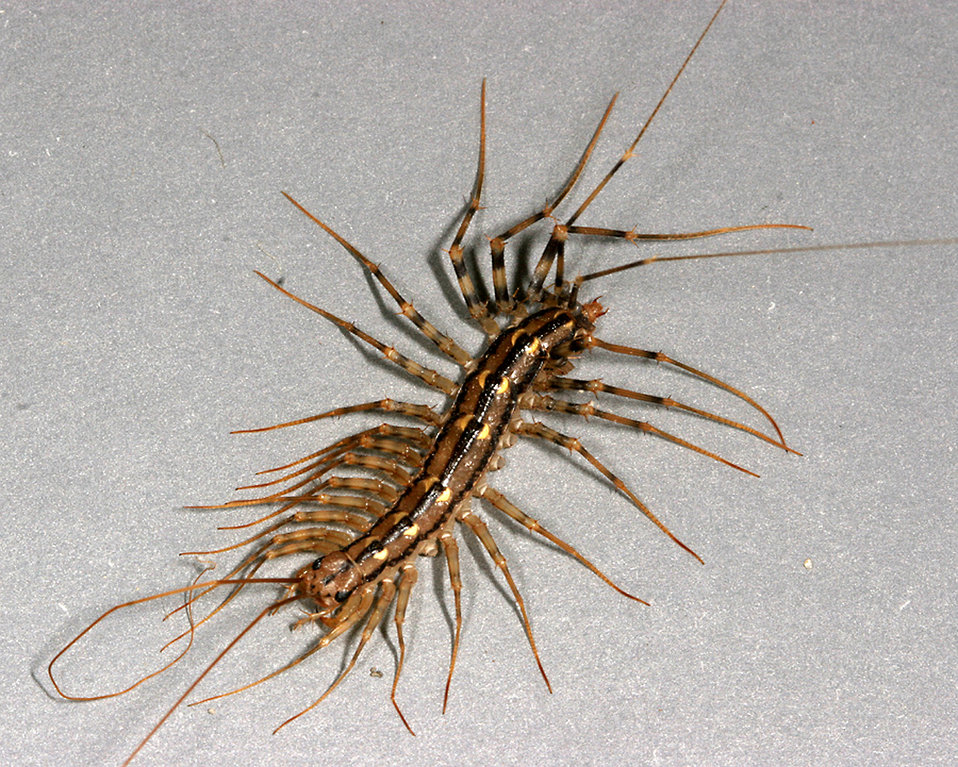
Photographed by Harvard University, Dept. of Environmental Health and Safety entomologist/environmental biologist, Dr. Gary Alpert, this 2006 image depicted a dorsoposterior view of a common house centipede, Scutigera coleoptrata. You'll note that a number of its legs are missing. However, these appendages may easily be detached if grasped by an enemy, and will continue to wriggle, in order to distract predators. Each segment of a centipede's body possesses a single pair of legs. Emanating from the head is a pair of sensorial antennae, and its three pairs of mouthparts, consisting of paired mandibulae with teeth, maxillae, and palps. Located behind its head, this arthropod's first pair of legs has evolved into a pair of fangs. Although a rare occurrence, when it does bite its victims, the centipede ejects its venom, which is not generally toxic, although it may cause extreme pain to humans.